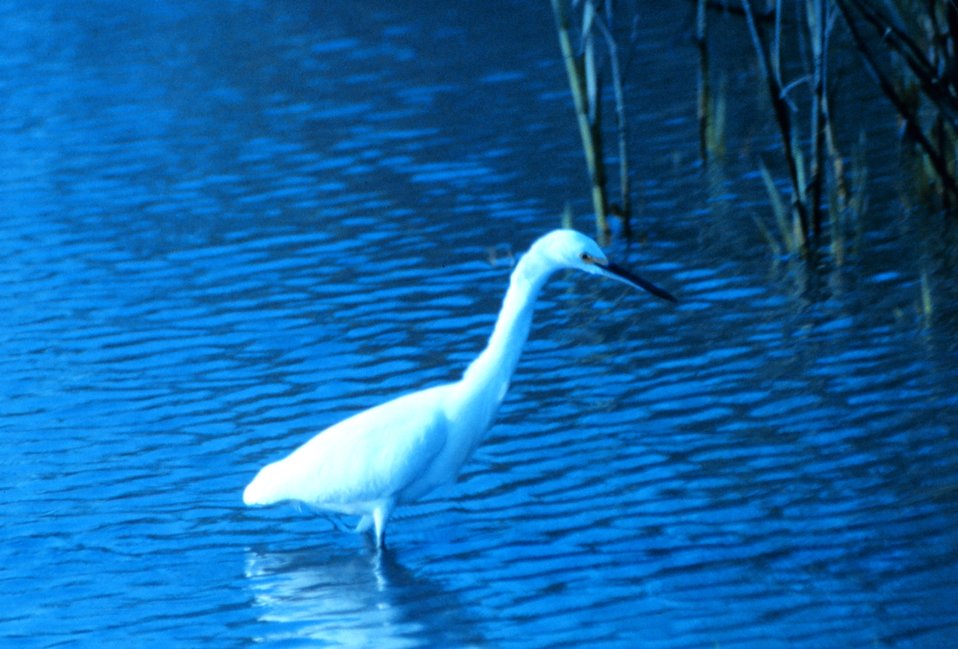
A great white egret in the tidal waters of Charleston harbor.